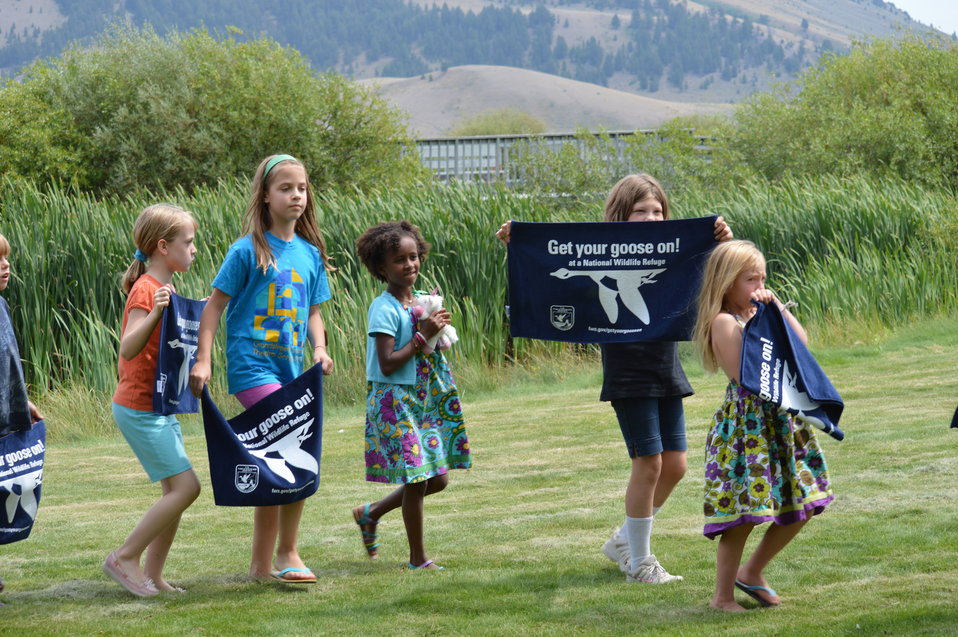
Get Your Goose On! - National Elk Refuge Style

On August 10, 2012 the U.S. Fish and Wildlife Service and Partners celebrated the 100 year anniversary of the establishment of the National Elk Refuge. In these photos, young attendees, along with Puddles the Blue Goose and the National Elk Refuge's mascot, showed us how to Get Your Goose On! with style.